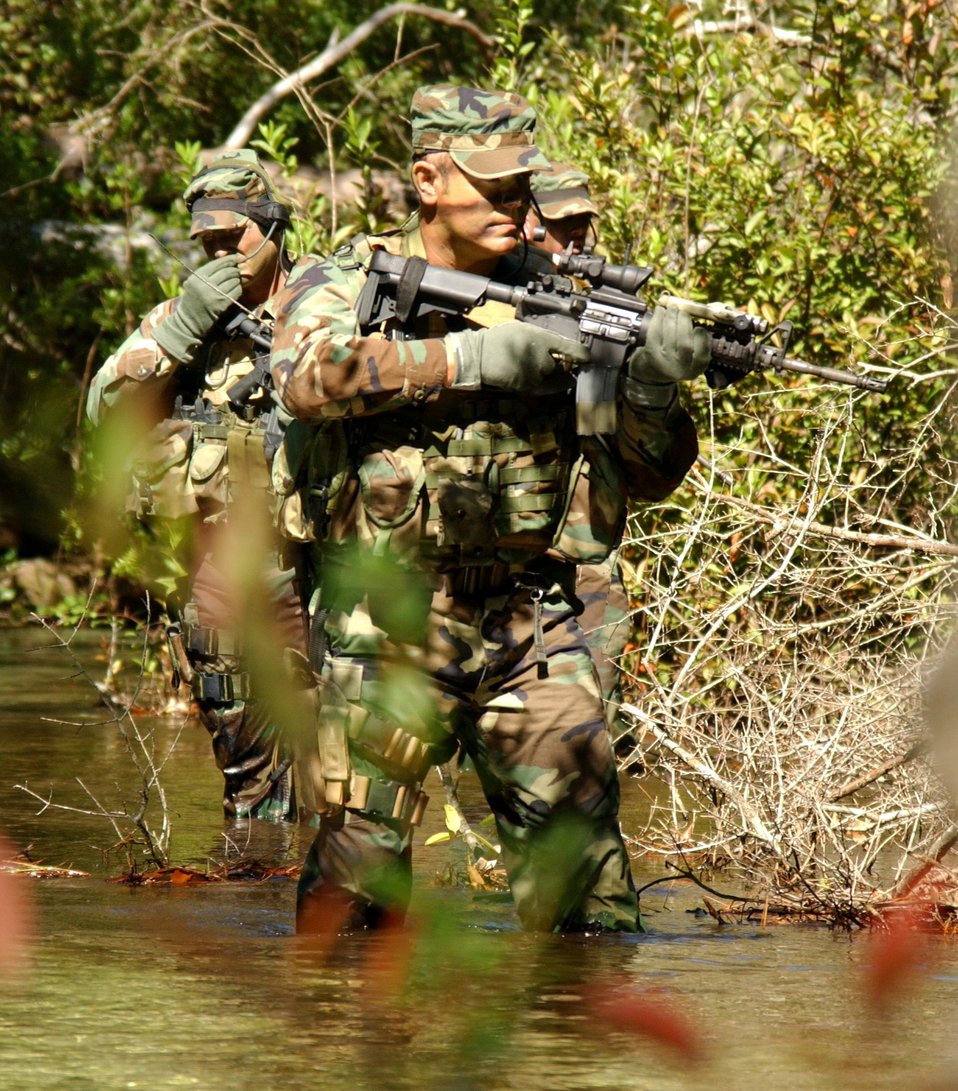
Weather warriors

HURLBURT FIELD, Fla. -- Capt. Don Garrett leads a special operations weather team during a training exercise here. Special operations meteorologists provide weather information to operators around the United States.